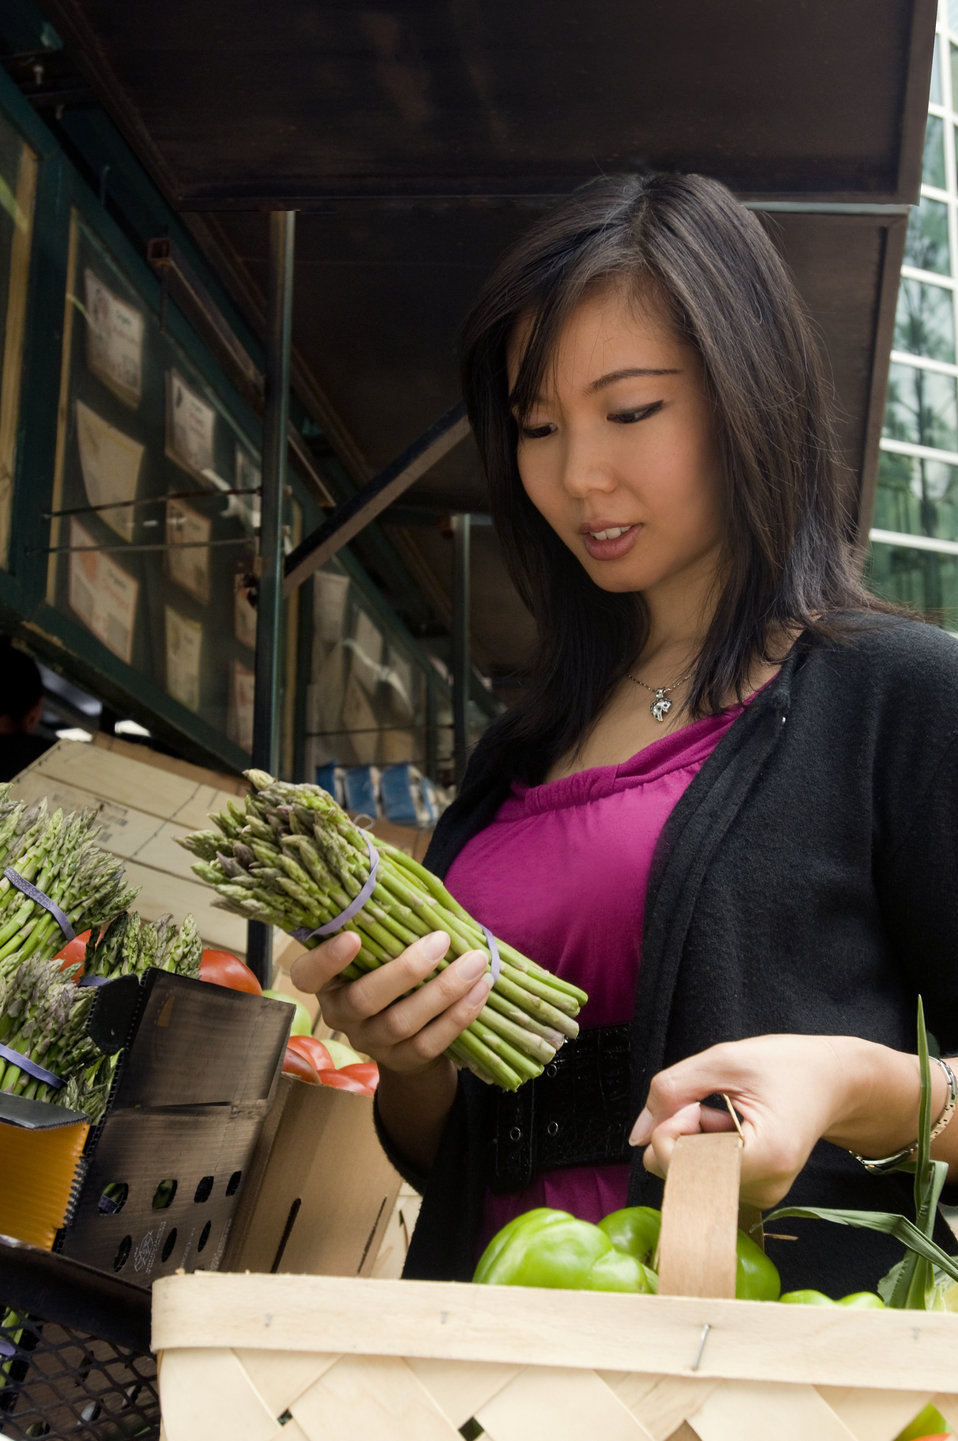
Woman shopping for groceries

This woman was photographed as she was shopping for groceries at a mobile Georgian farmers market at a point in her activity where she was picking out a bunch of asparagus in the market's produce section. Holding them in her right hand, she was visually inspecting the bound stalks before adding them to her woven wooden basket.